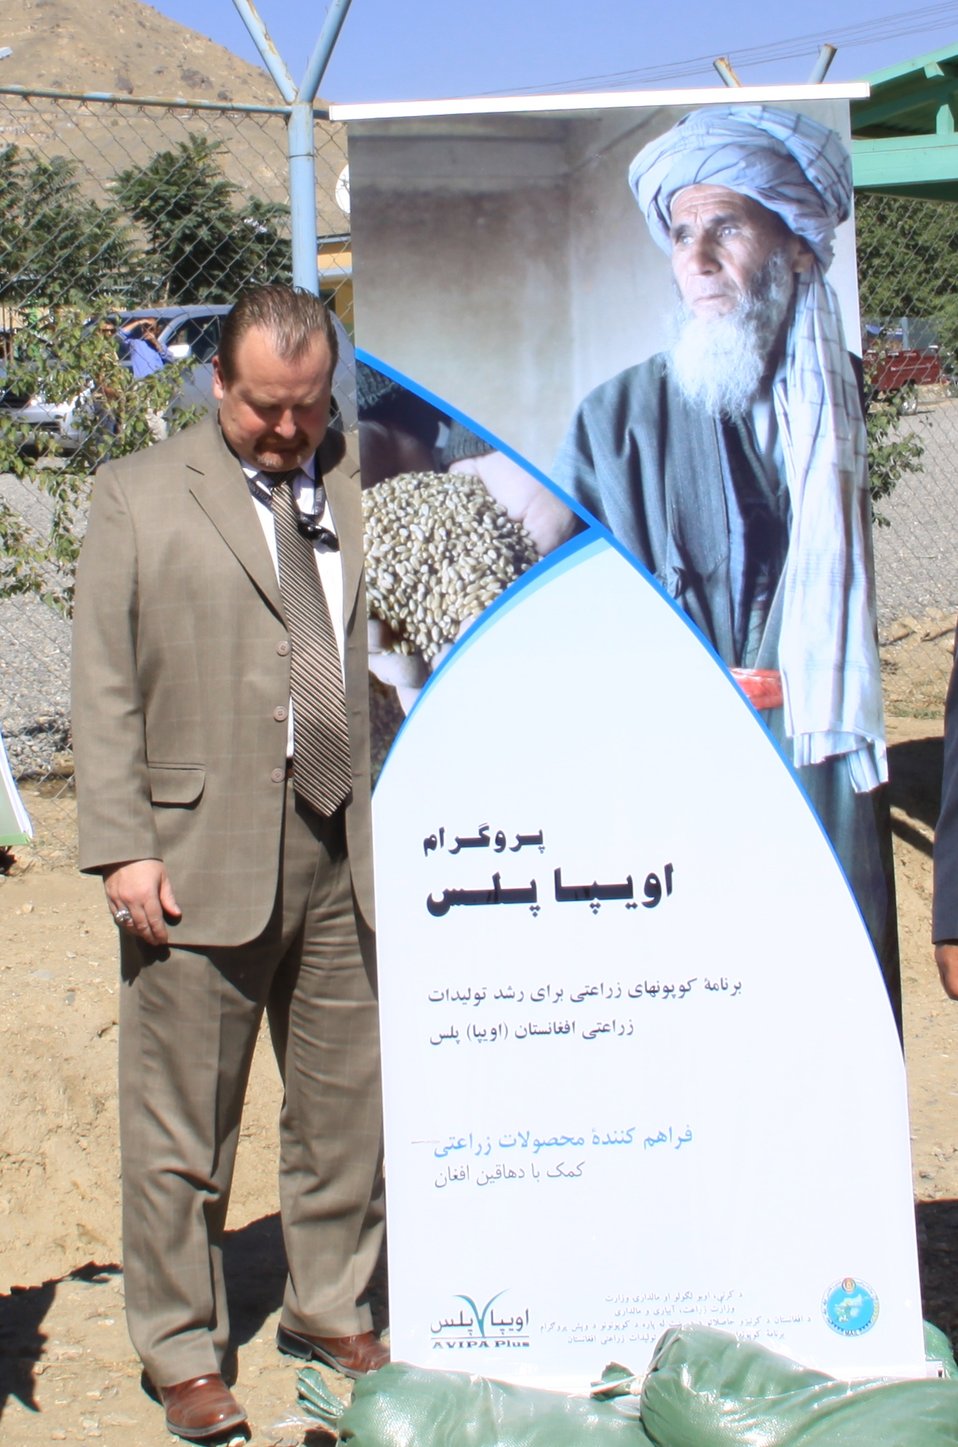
AVIPA Plus Wheat Seed Distribution 101005

US Ambassador Karl Eikenberry and USAID Acting Mission Director Kevin Brownawell joined the Minister of Agriculture, Irrigation and Livestock, H.E. Minister Mohammed Rahimi in signing a Memorandum of Understanding and distributing vouchers to area farmers for wheat and fertilizer.